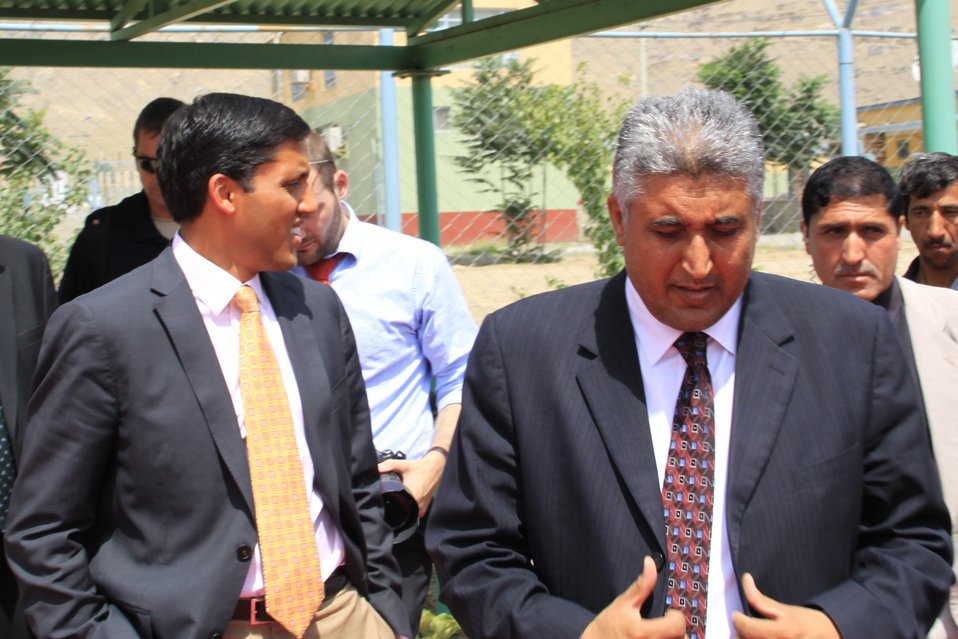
Badam Bagh Farm